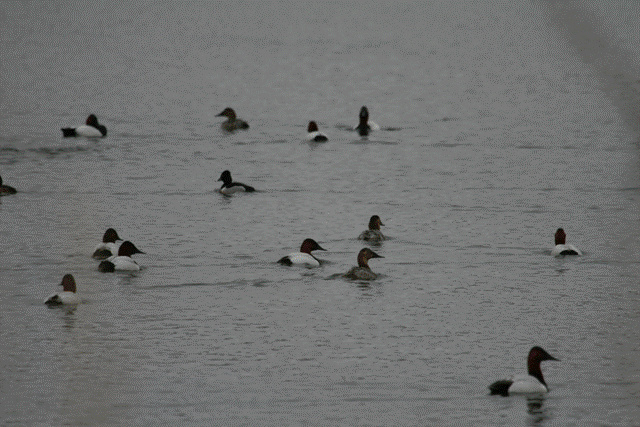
Diver Ducks Swimming

The diving ducks are a category of ducks which feed by diving beneath the surface of the water. Des Lacs Refuge has see a very large influx of divers using the Refuge this spring.